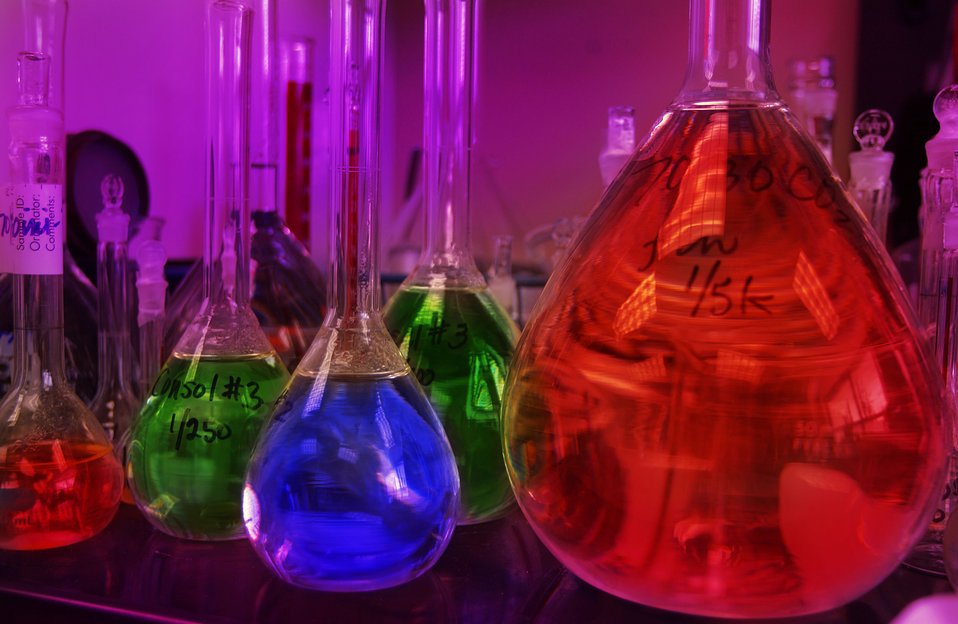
Laboratory flasks filled with miscellaneous chemicals.